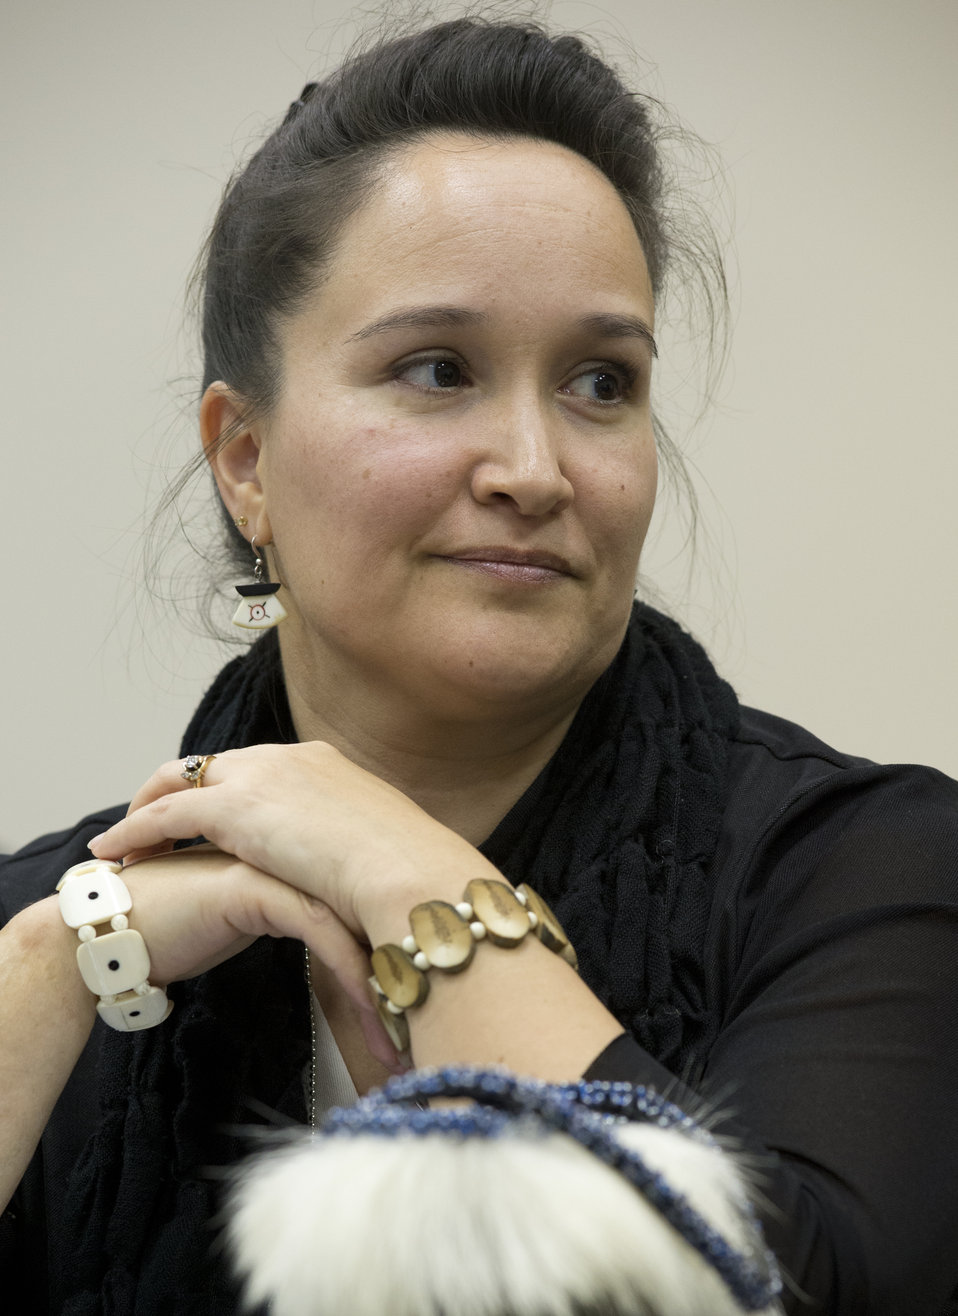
North Star Group, D.C. Government and Community Affairs Senior Advisor Amy Sparck Dobmeier listens to Agriculture Deputy Secretary Krysta Harden speaking at a roundtable discussion on Agriculture, Community and Economic Development Opportunities in Indian Country with Agriculture with tribal leaders at the U.S. Department of Agriculture (USDA) in Washington, D.C. on Tuesday, Nov. 12, 2013.